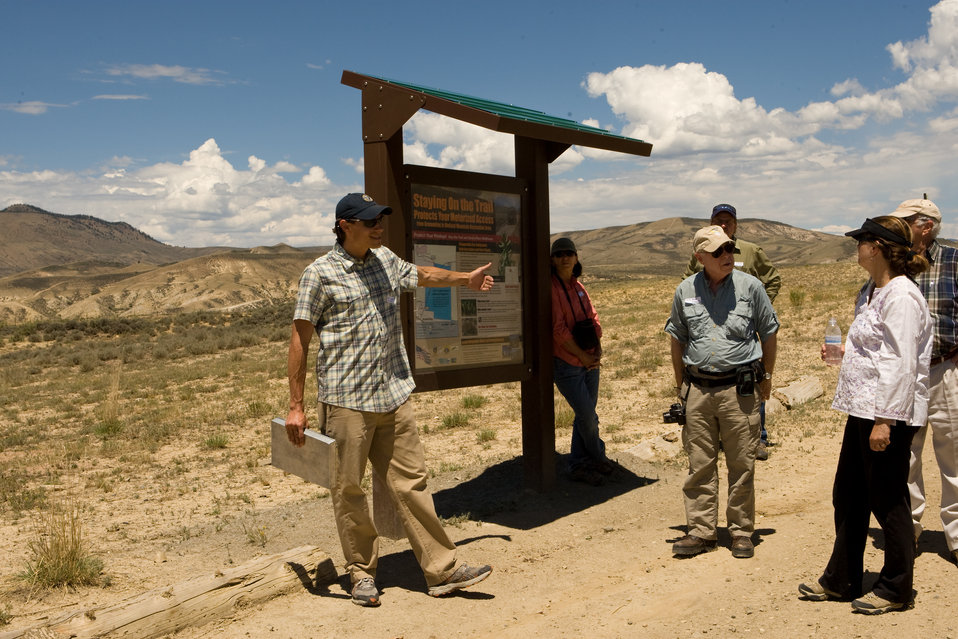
Natural Areas Program Kiosk in Kremmling

The Colorado Rare Plant Conservation Initiative (RPCI) is a partnership of 23 statewide and regional agencies, private organizations, and academic institutions working to conserve 121 rare plants in Colorado. As part of these efforts the group developed the Colorado Rare Plant Conservation Strategy, developed Best Management Practices to reduce energy development impacts, addressed climate change, and developed focused strategies for the conservation of individual species at eight priority landscapes. The group has also worked to coordinate volunteer efforts for plant conservation across the state.